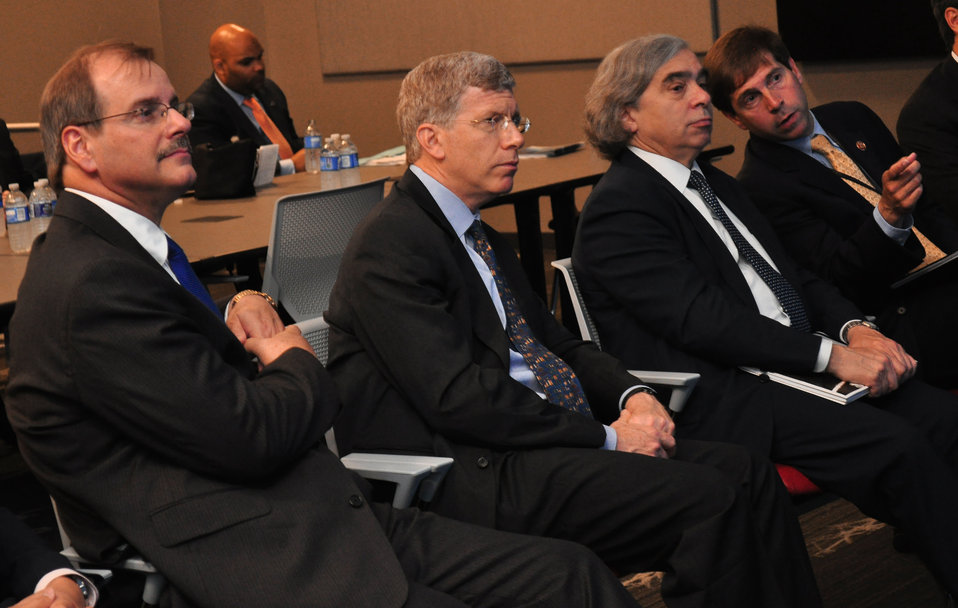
DOE Secretary of Energy Ernest Moniz in Oak Ridge

13-067 DOE photo Lynn Freeny 6-3-2013 Oak Ridge Tennessee